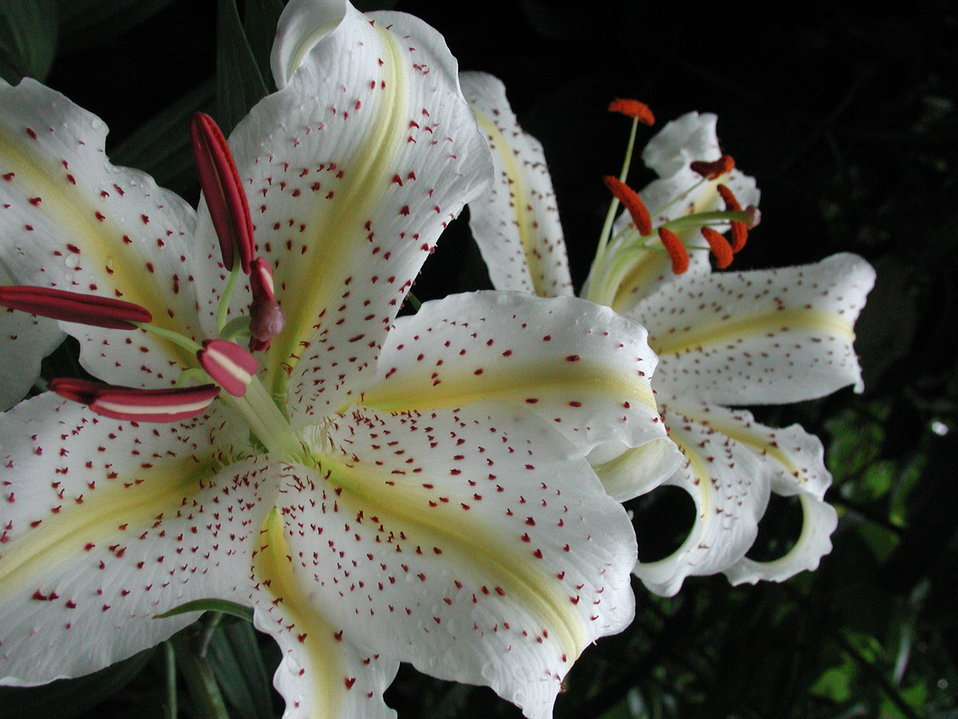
A neat closeup I took of a Japanese Lily, taken Jul. 2007 on the temple grounds of Engaku-ji.